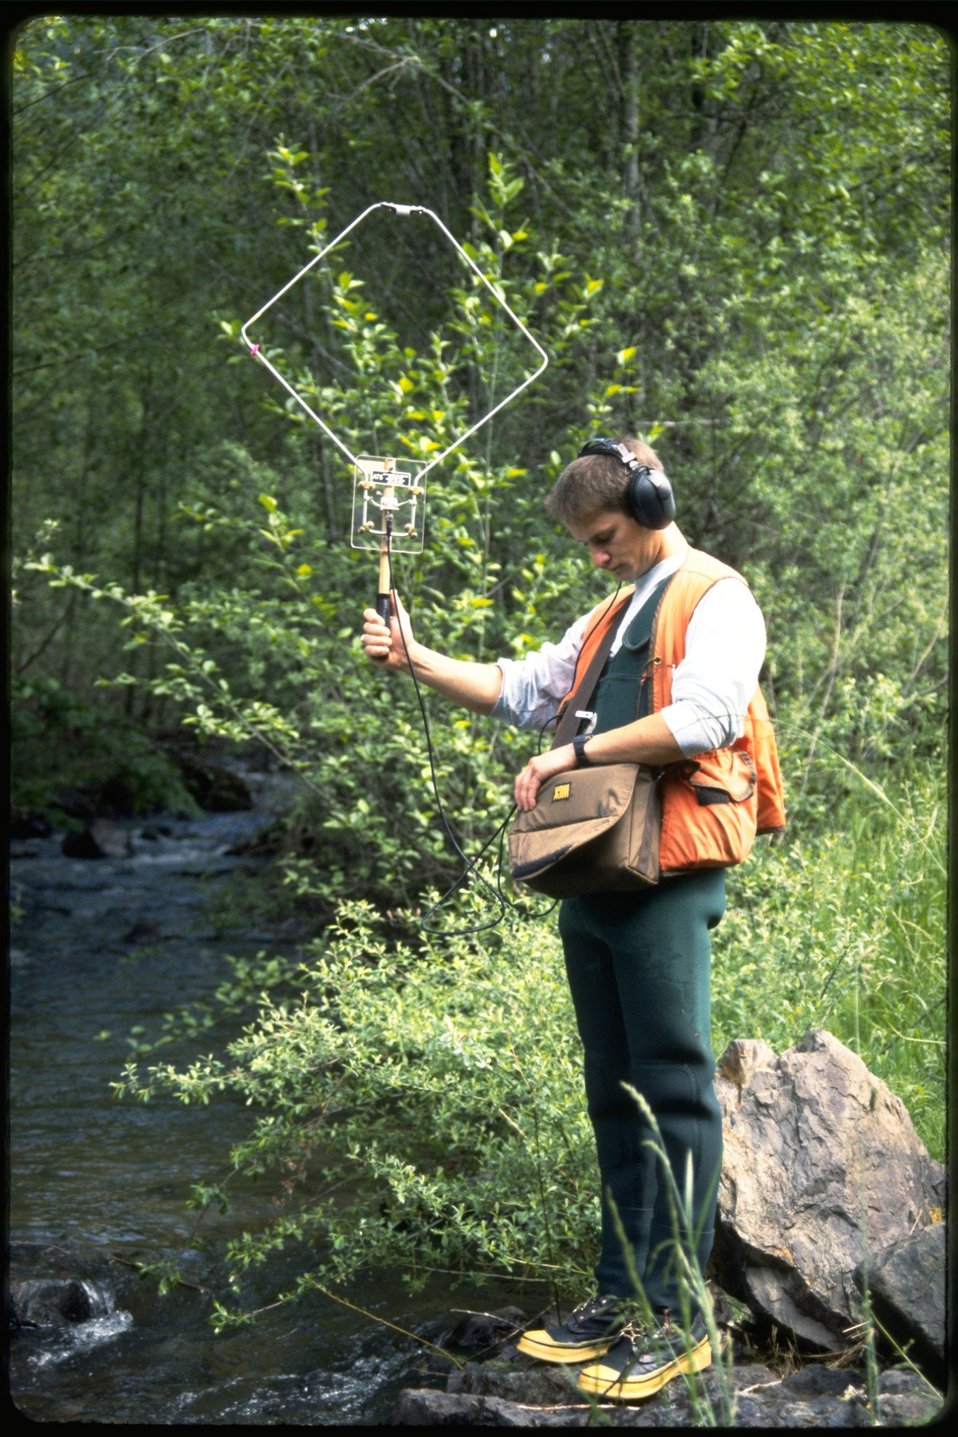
A BLM fish study.